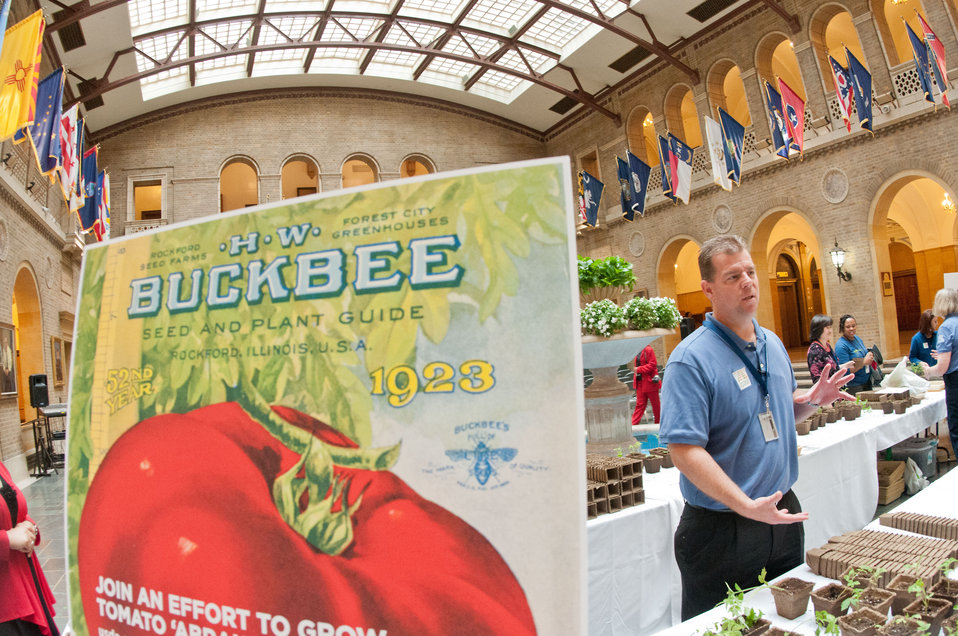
Agriculture's Farm Service Agency volunteer Executive Master Gardener Martin Bomar, talks with fellow employees about the joys and caring of ‘Abraham Lincoln” Tomato seedlings that the People’s Garden Initiative is distributing to USDA employees in celebration of the 150th Anniversary of the U.S. Department of Agriculture, on Tuesday, May 15, 2012 in Washington, D.C., on this day, 150 years ago, President Abraham signed the Department into existence during the Civil War. In 1923 the H.W. Buckbee seed company of Rockford, Illinois introduced an heirloom variety named in honor of Illinois’ Greatest Son – Abraham Lincoln. The plant produces large beefsteak tomatoes in about 90 days. Volunteer Executive Master Gardeners planted and cultivated more that 3,000 seedlings ranging in size from one inch to more than a foot tall, so people could choose the best ones to transport home and to stagger the harvest by selecting a small and large seedling. One of the hopes of this event is to share the joys of gardening and harvesting, as well as the opportunity to share your harvest in your community. Seed packets are being distributed to People’s Gardens worldwide.